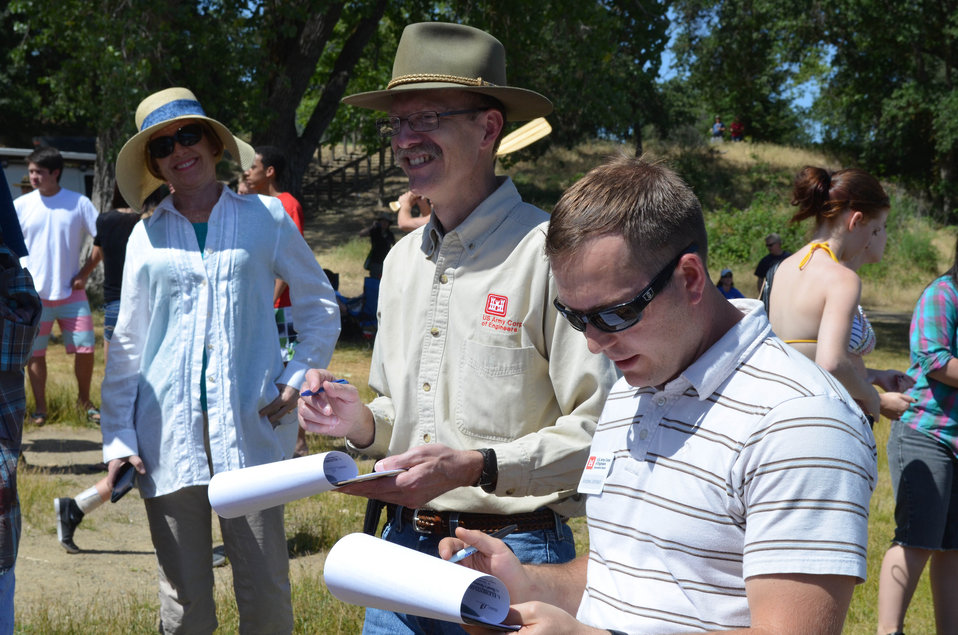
District employees judge annual Folsom High School Regatta

Sacramento District employees Bradley Call (right) and Andrew Johnson (center) observe one of the boats competing in the Folsom High School Regatta at Negro Bar State Park in Folsom, Calif., May 24, 2013. Call and Johnson represented the Sacramento District as judges for the contest. High school and middle school students constructed boats from cardboard, plywood, or other buoyant materials to compete in the race.